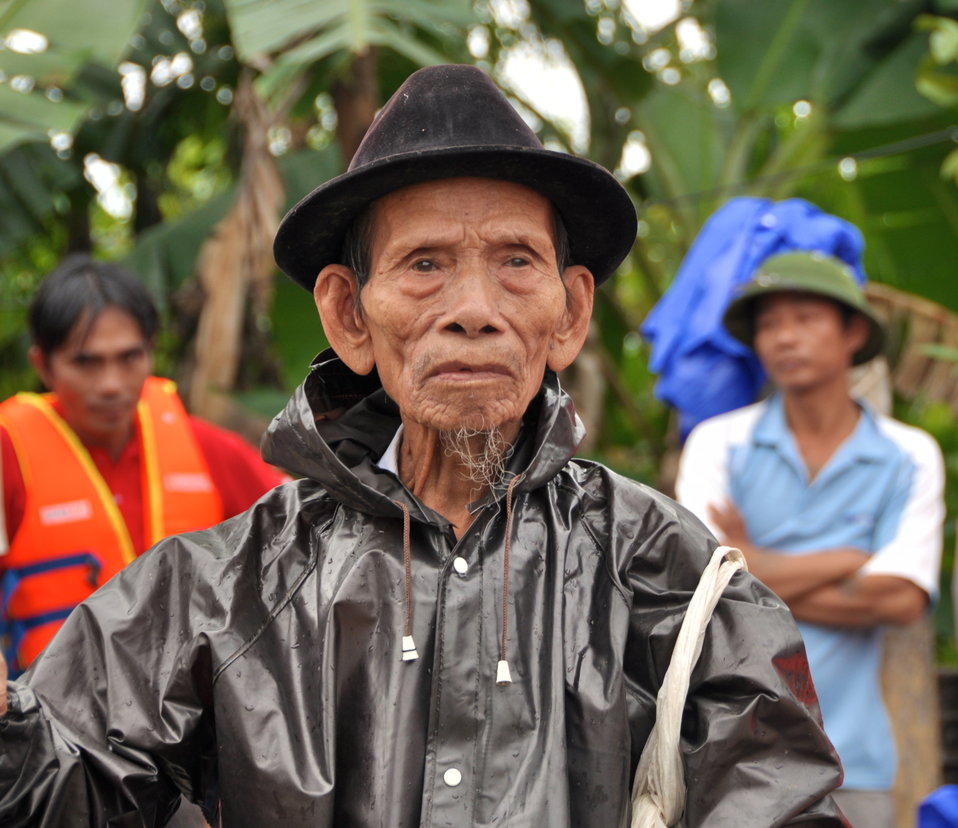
USAID and Save the Children support community evacuation drill and emergency preparedness in central Vietnam

Loc An Commune, Phu Loc District, Thua Thien Hue Province
December 4, 2012, Photo: Richard Nyberg, @USAIDVietnam